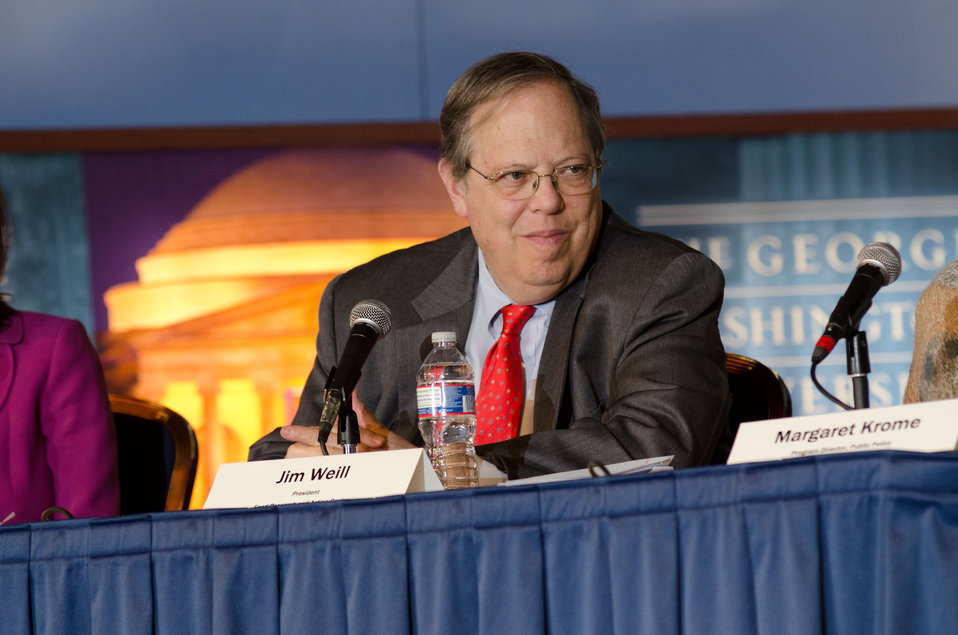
Food Research and Action Center President Jim Weill, makes opening remarks before a question and answer session during the “Shaping the Farm Bill for a Sustainable Future” Forum in the Jack Morton Auditorium, at the Trachtenberg School of Public Policy and Public Administration, on the George Washington University campus in Washington, D.C., on Thursday, March 1, 2012.